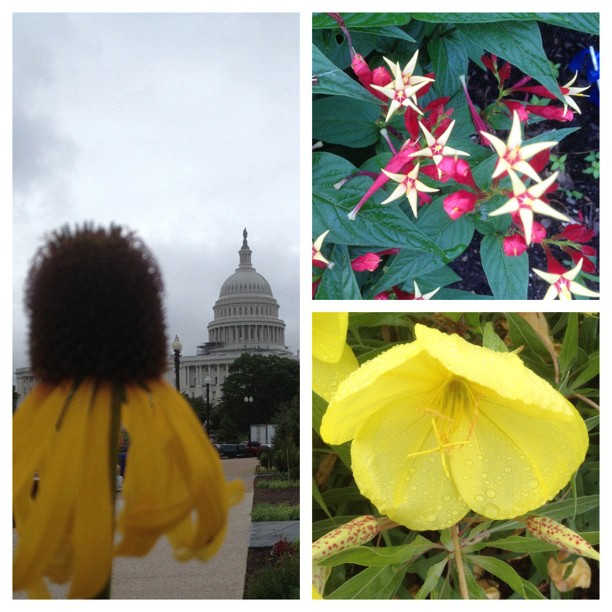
Plants enjoying rainy days in #dc at the US Botanic Garden.